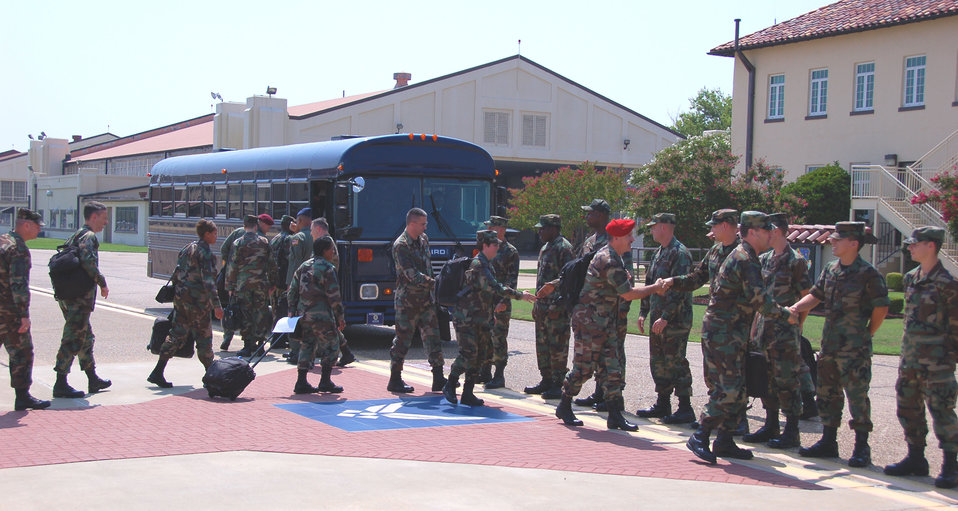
Senior Enlisted Leader Summit

Senior enlisted leaders arrive at Maxwell Air Force Base, Ala., July 21 with Chief Master Sgt. of the Air Force Rodney J. McKinley for the start of the 2007 Senior Enlisted Leader Summit at nearby Gunter Annex, Ala.